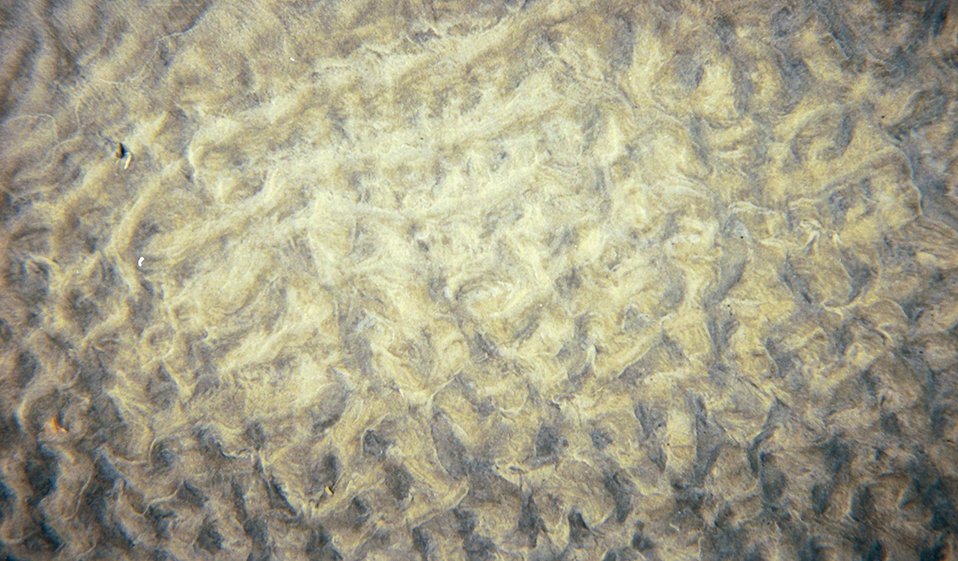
A beautiful ripple pattern in the tidal zone.